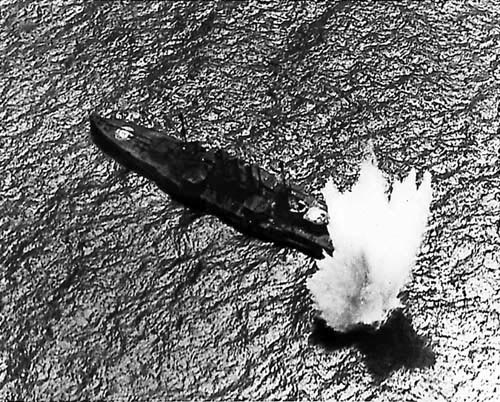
Bombing of Ostfriesland

On June 21, 1921, U.S. Army Air Service pilots bombed the captured German battleship Ostfriesland to demonstrate the effectiveness of aerial bombing on warships. At the time, the ship was one of the world's largest war vessels. Brigadier